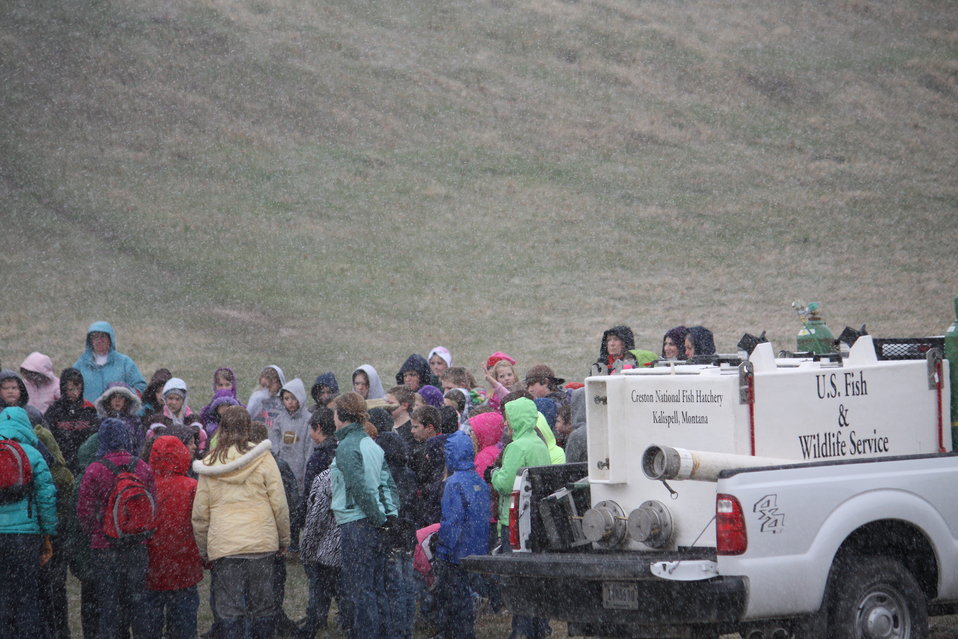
Snow Fun and Rainbow Trout

Flathead Valley Students enjoy stocking rainbow trout, from the Creston National Fish Hatchery, in a local pond.

Location: Creston National Fish Hatchery

Credit: Evie Bradley / USFWS

Photo Contest Entry #105